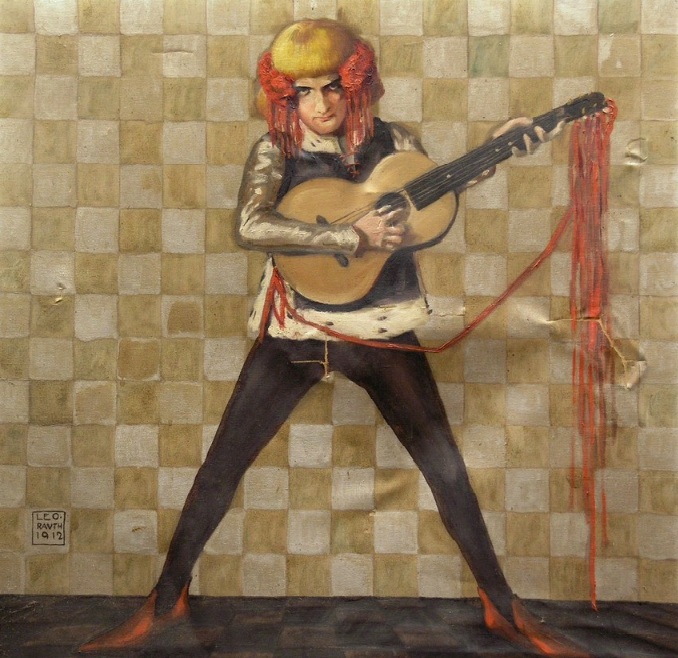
Leo Rauth Pagenlied